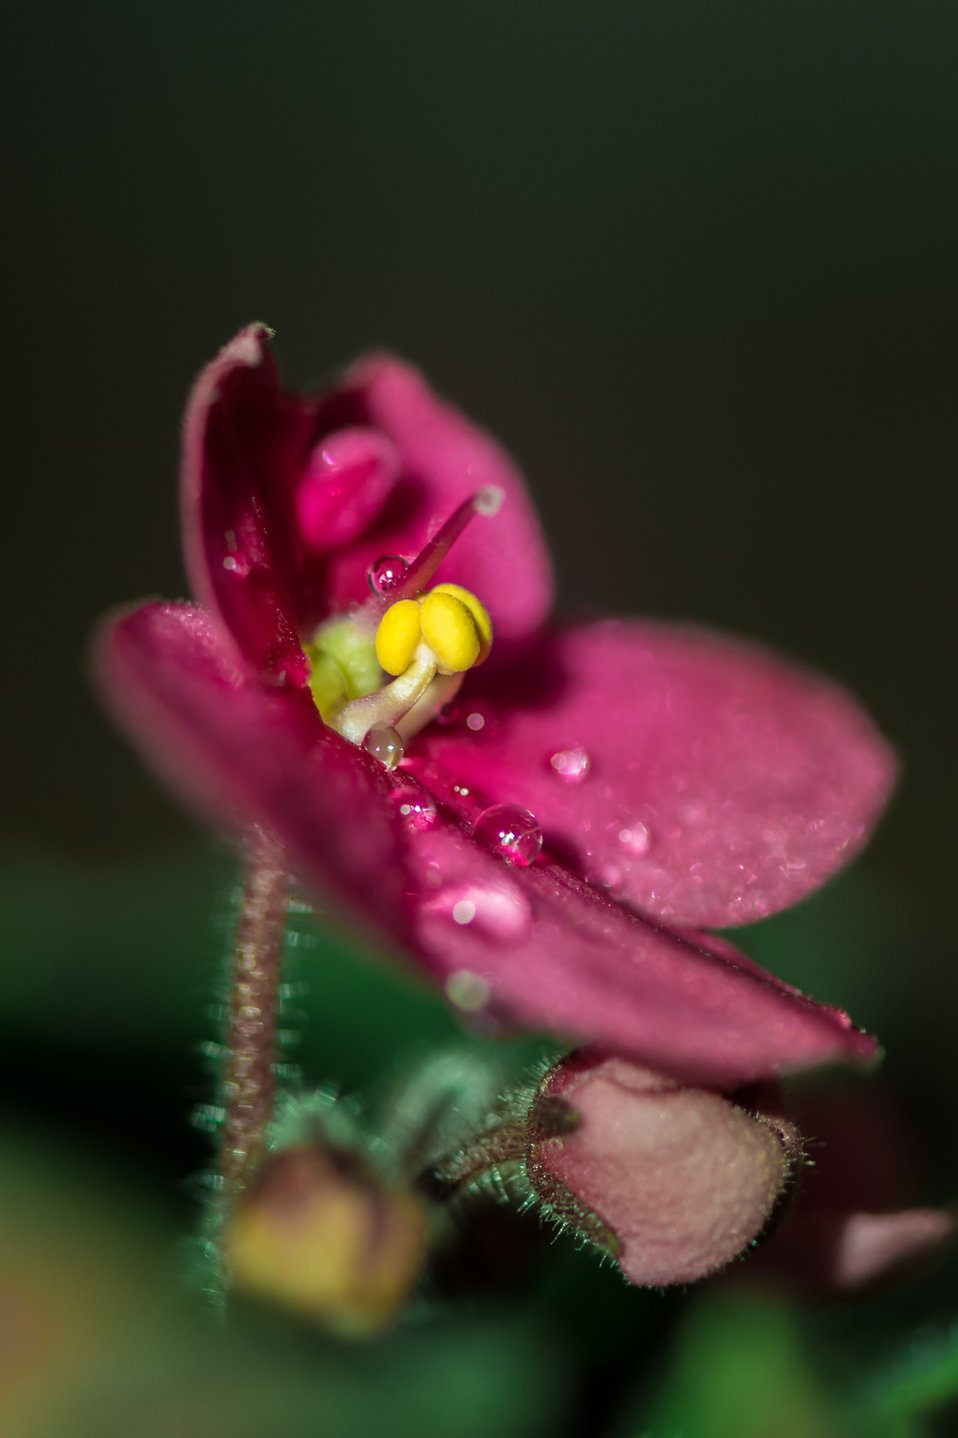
Violet flower

Detail violets.